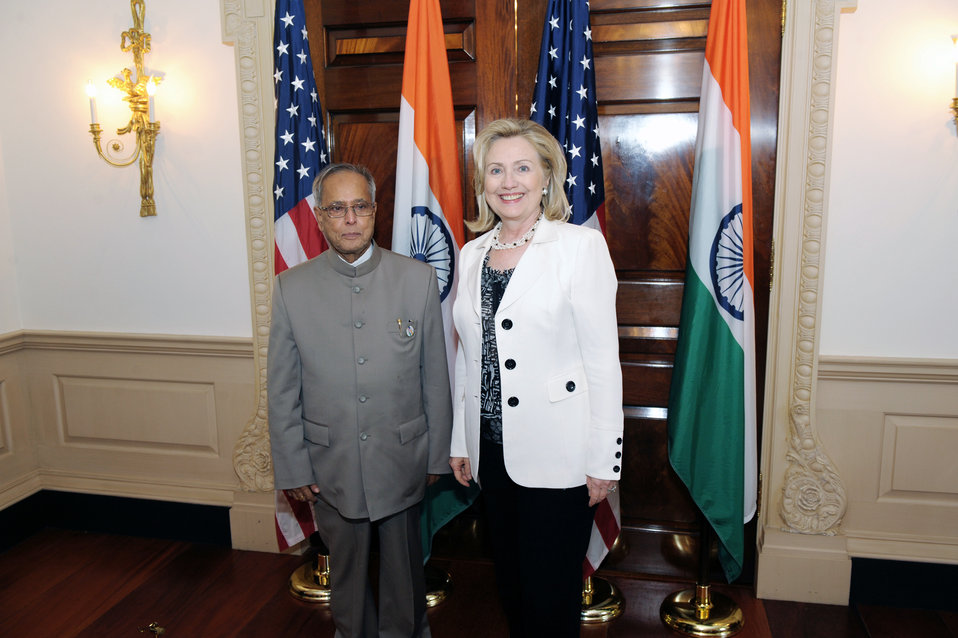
Secretary Clinton Meets With Indian Finance Minister Mukherjee

U.S. Secretary of State Hillary Rodham Clinton meets with Indian Finance Minister Pranab Mukherjee, at the U.S. Department of State in Washington, D.C., on June 28, 2011.